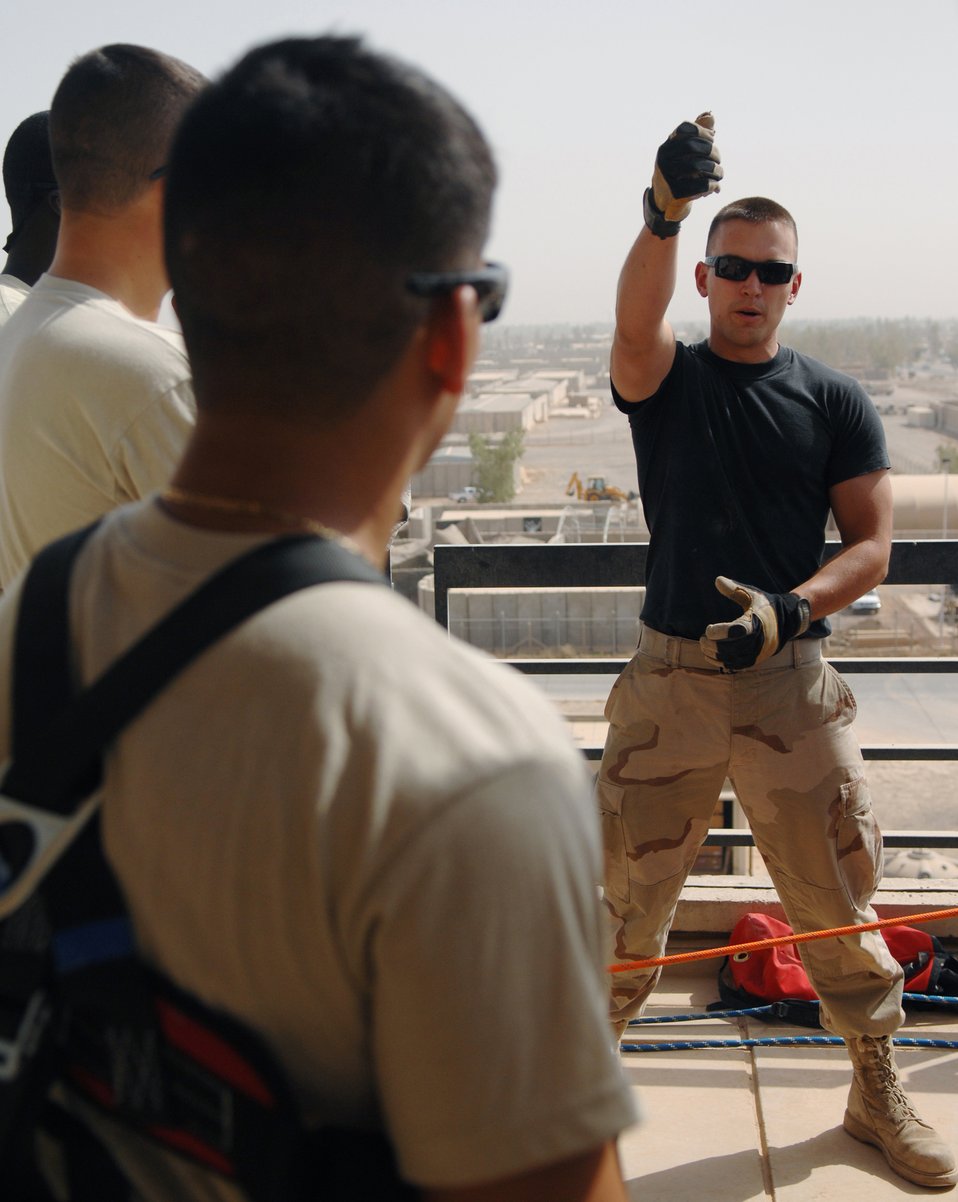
Balad firefighters rappel tower

Senior Airman Kristopher Peterson conducts a safety briefing before a rappelling training exercise Aug. 20, 2009, at Joint Base Balad, Iraq. Airman Peterson is a firefighter with the 332nd Expeditionary Civil Engineer Squadron.